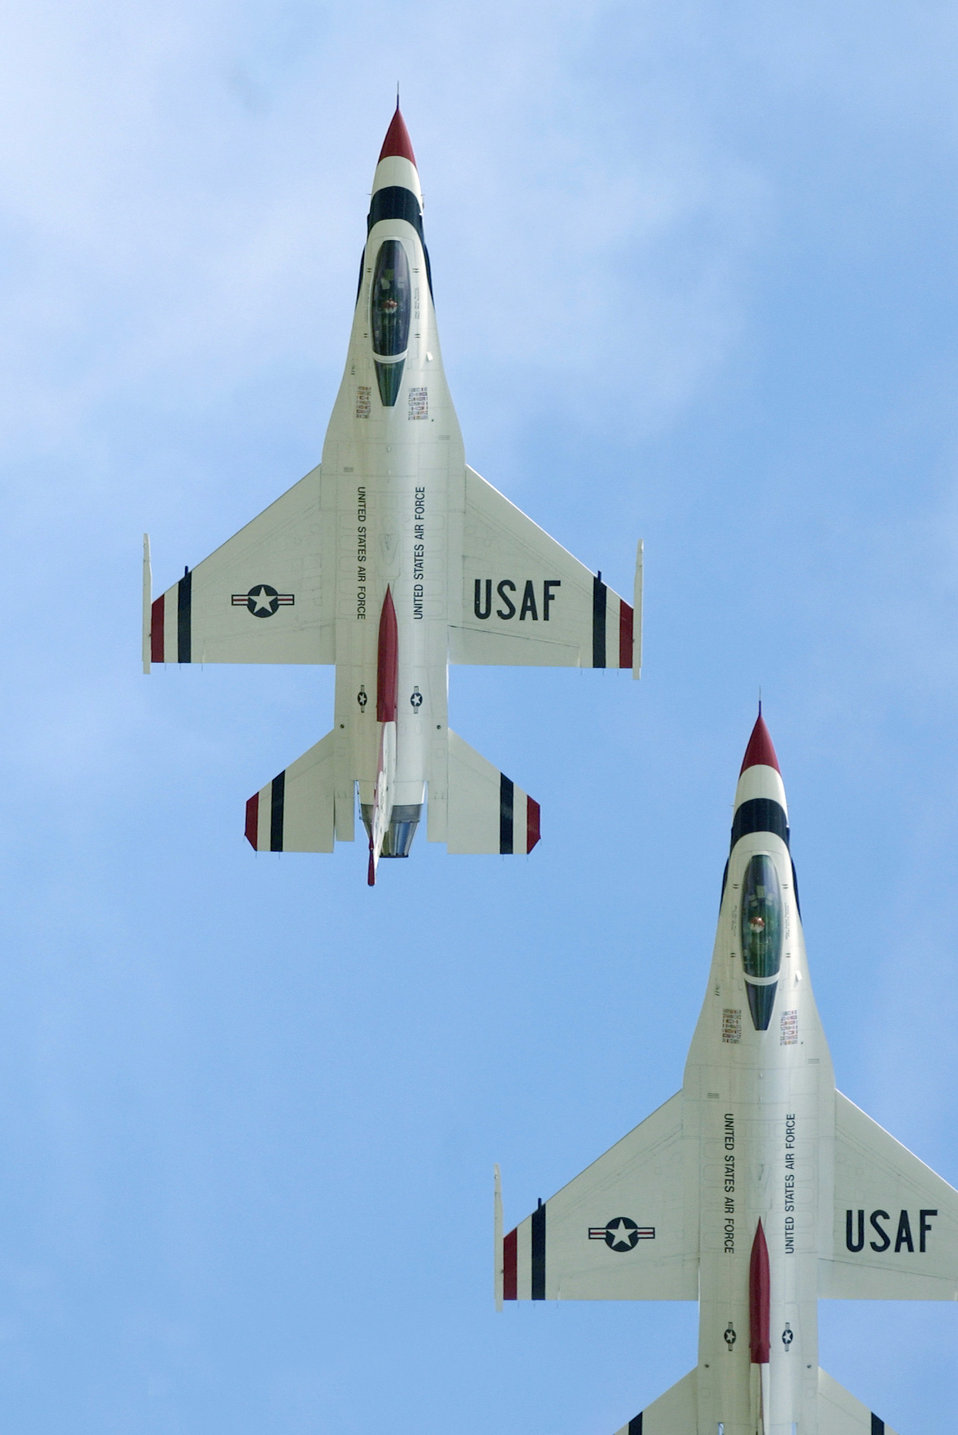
Gettin' the thunder

ANDERSEN AIR FORCE BASE, Guam -- The U.S. Air Force Demonstration Team "Thunderbirds" perform here for the first time in 10 years Sept. 12. Andersen's open house air show drew a crowd of more than 20,000.